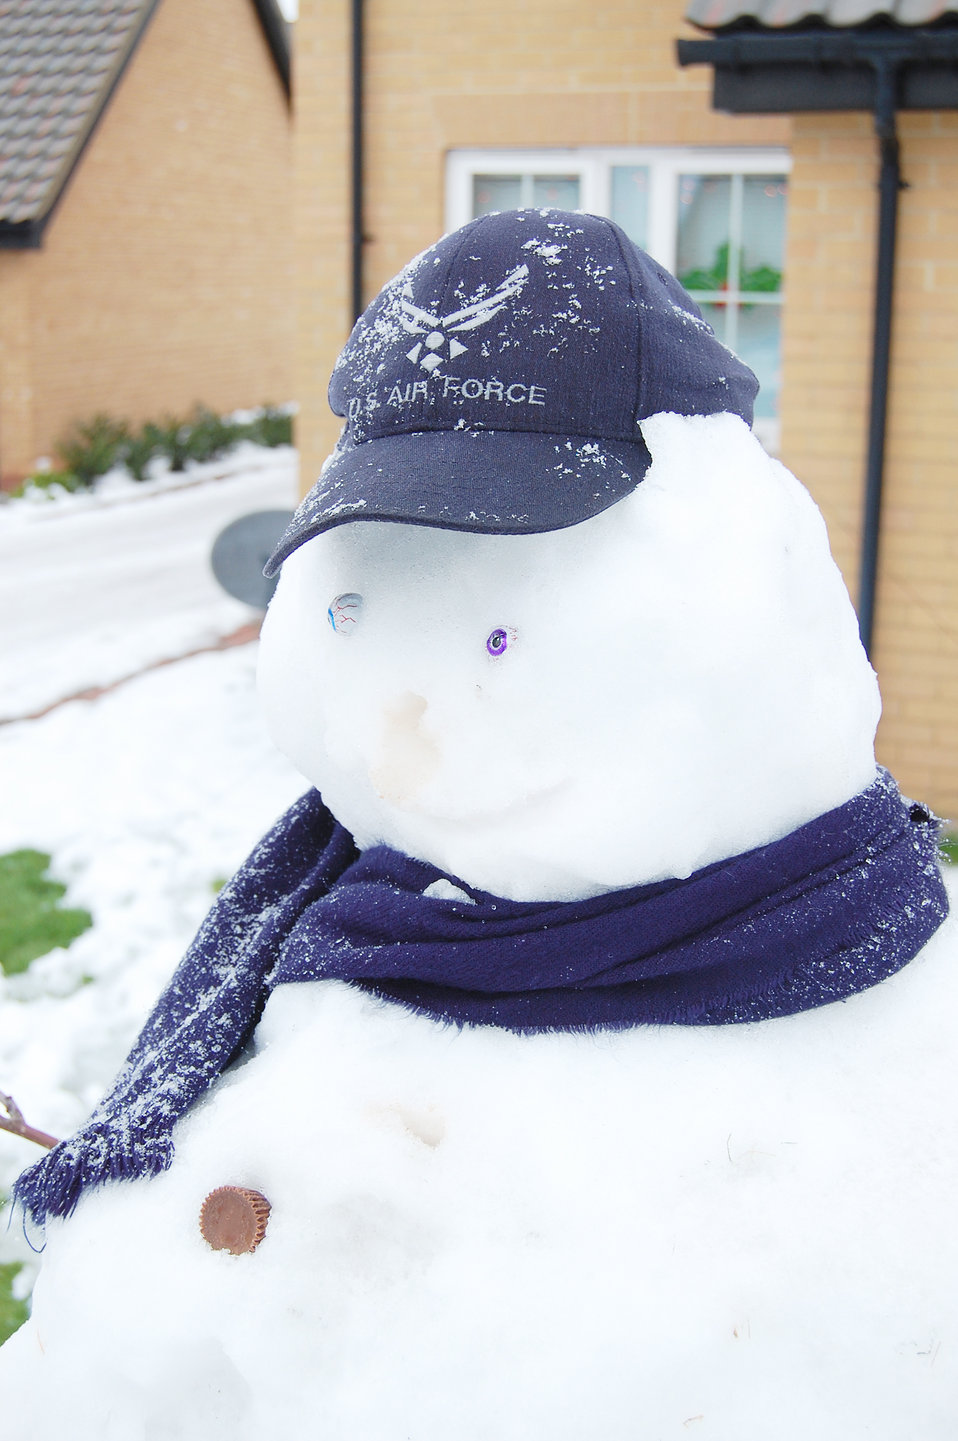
Air Force Frosty appears

After a night of heavy snow and ice, some people built snowmen in their yards in base housing at Royal Air Force Lakenheath, England, Dec. 22, 2009. The winter weather made road conditions hazardous and resulted in the base shutting down for the day. As soon as it began to warm, this snowman lost his nose.